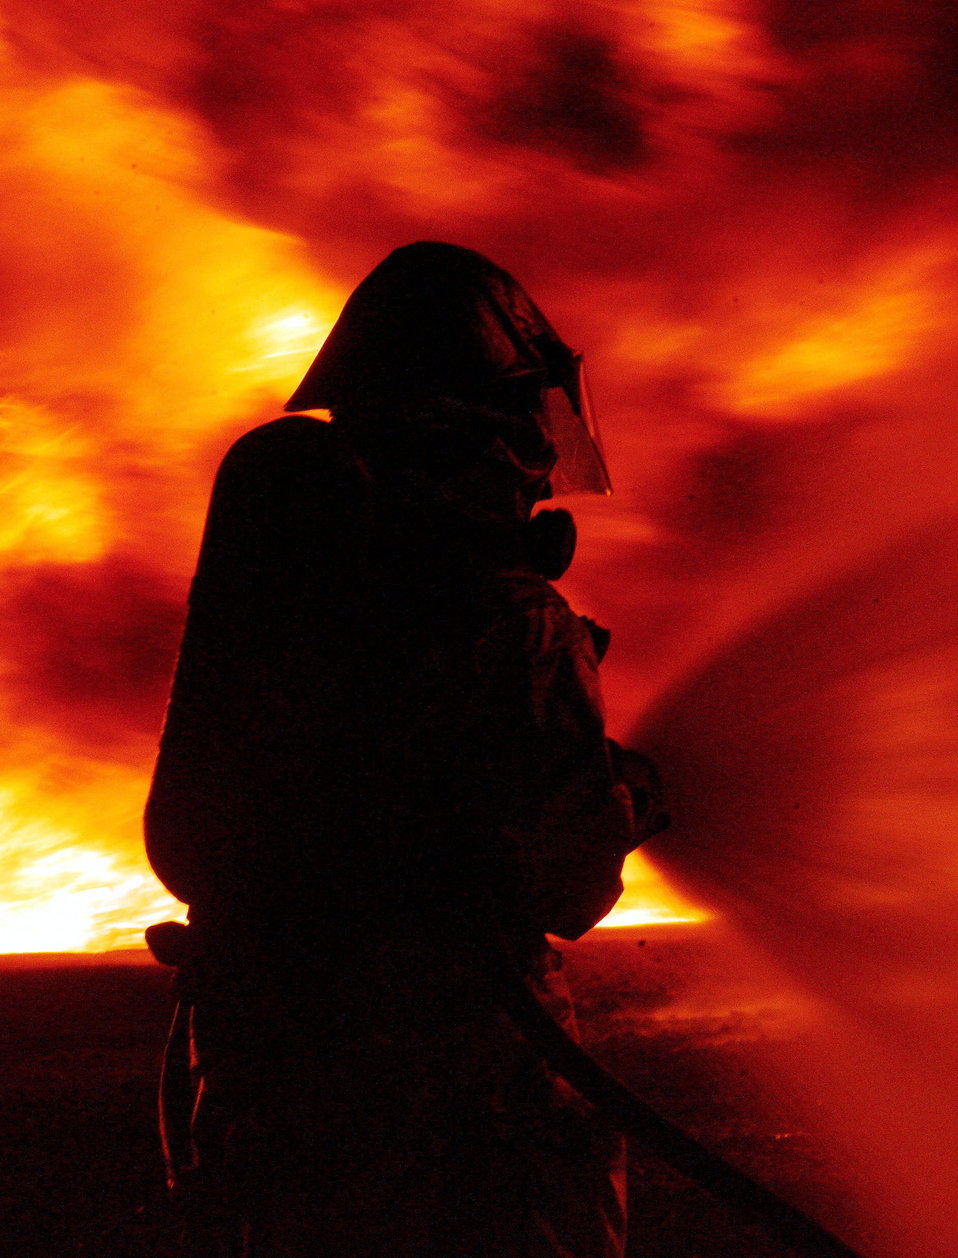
Inferno

SOUTHWEST ASIA -- A firefighter with the 321st Air Expeditionary Wing practices extinguishing a pit fire here Nov. 17. Firefighters deployed from Minot Air Force Base, N.D., and Grand Forks AFB, N.D., conducted the pit fire as a training tool.